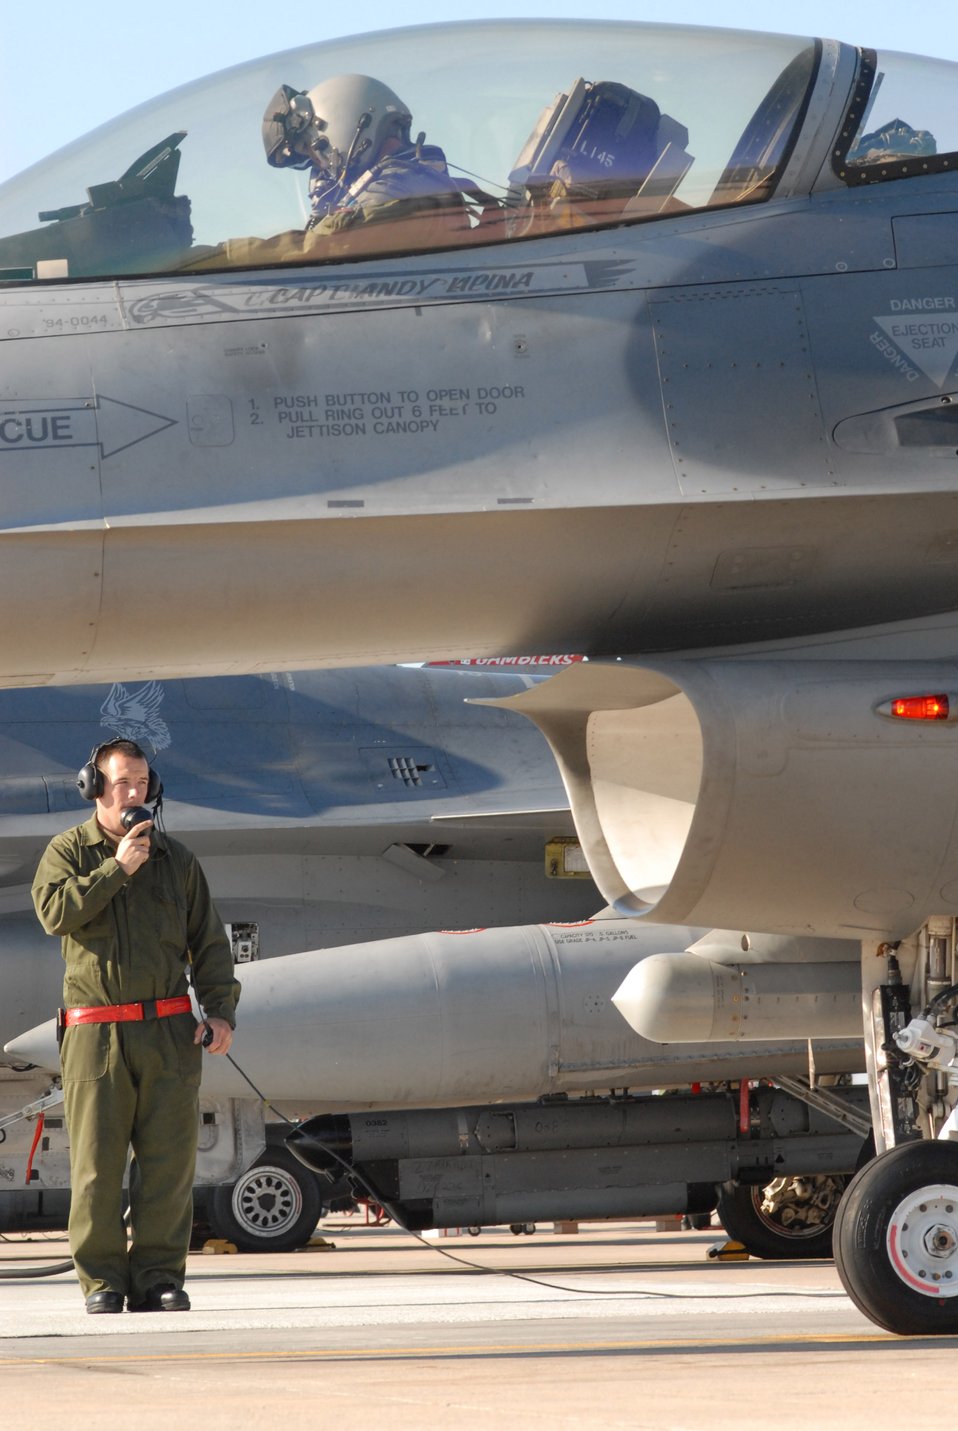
Iron Thunder roars through Shaw

Staff Sgt. Donald Slayton performs a preflight inspection before launching an F-16 Fighting Falcon in support of Exercise Iron Thunder Feb. 7 at Shaw Air Force Base, S.C. The objective of the exercise is to prepare units for future contingency operations by offering a chance for players to be exposed to missions identical to those faced in combat. Sergeant Slayton is a 77th Fighter Squadron crew chief.